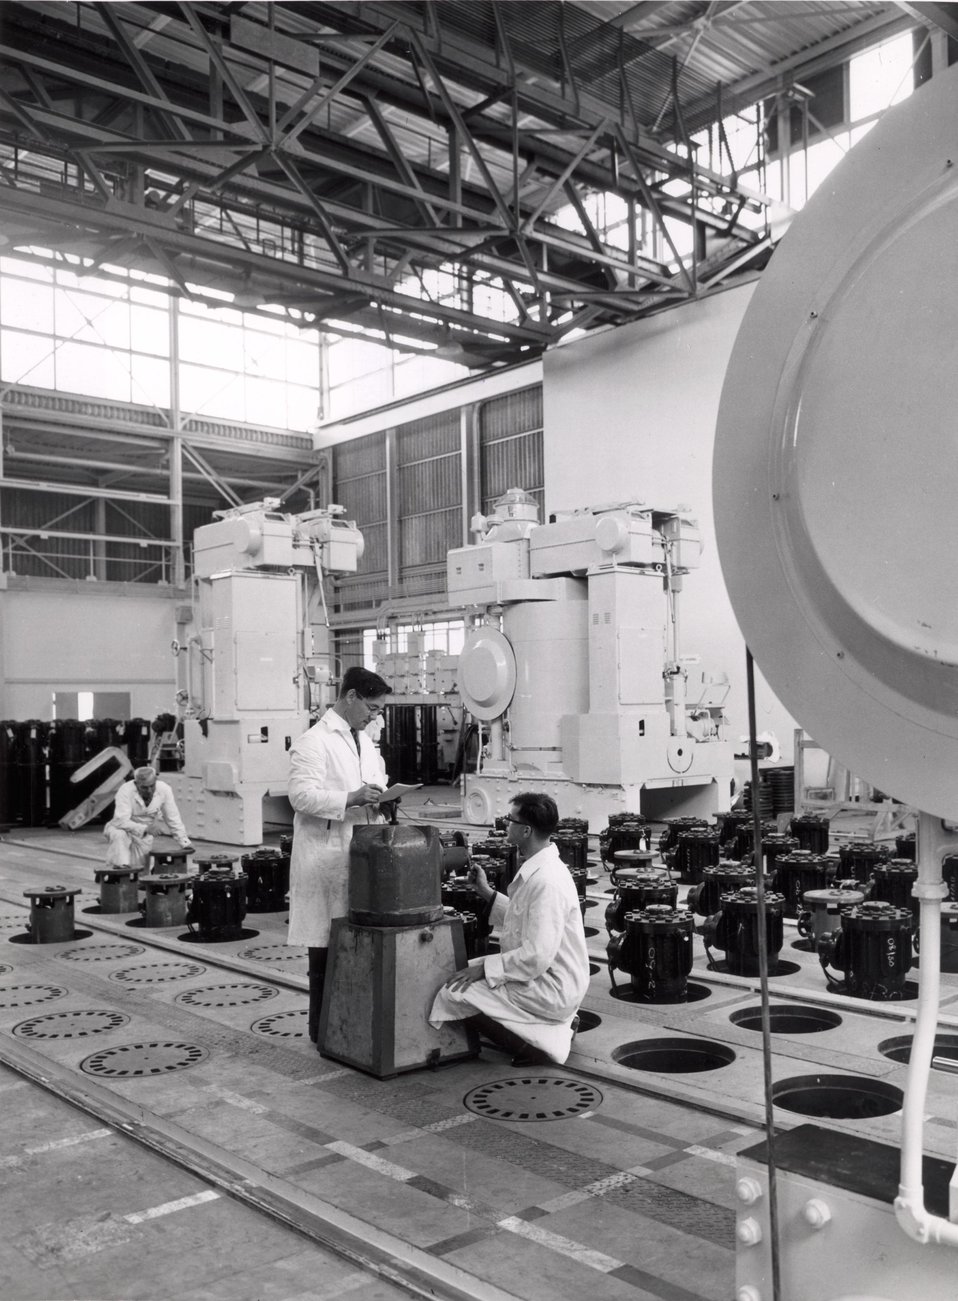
Calder Hall. The charge-discharge deck of No. 1 reactor of the Calder Hall A atomic power station. Assistant design engineer James Kearney, aged 28 of Liverpool, and physicist-shop manager Anthony Farmer, aged 26 of Stratford on Avon, are seen making measurements of neutron flux among the control rod actuators. c. 1956